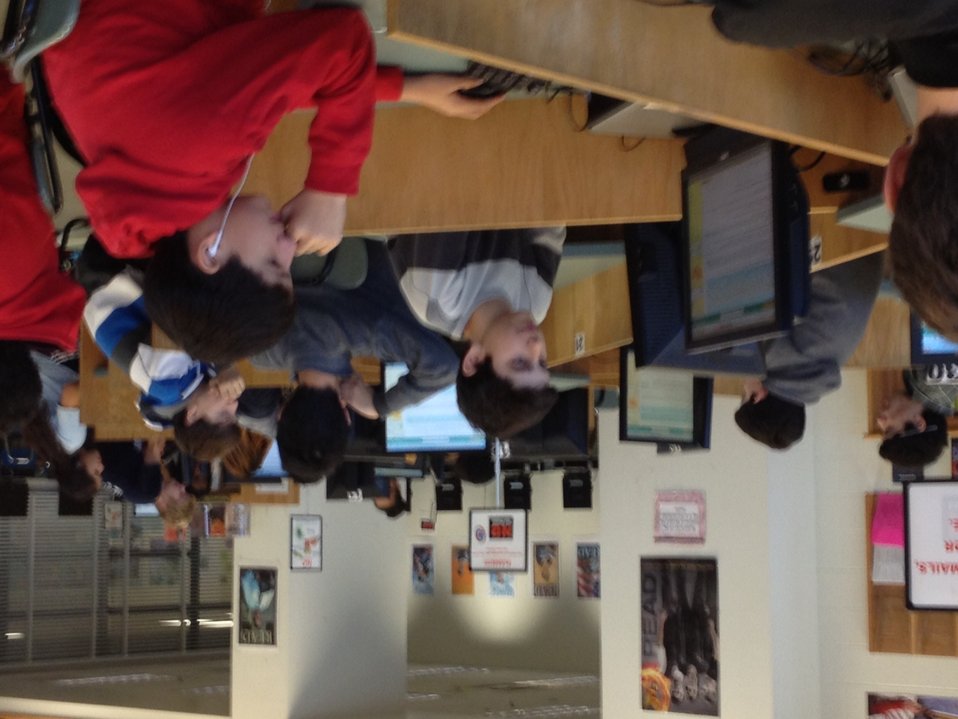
Chat Day NDFW 2013

Rockville, MD. Students from Walter Johnson H.S. participate in NIDA's National Drug Facts Week Chat Day Event, 2013.